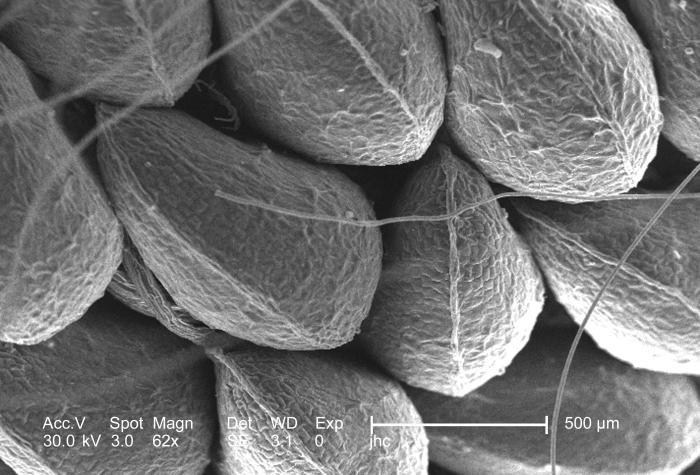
Under a low magnification of only 62x, this scanning electron micrograph (SEM) depicted a view of a seed clustered exterior of a commonly growing wild strawberry, Fragaria virginiana, that was found growing in Lullwater Park, inside the Decatur, Georgia suburbs. The F. virginiana fruiting bodies are very similar to the more familiar, store-bought varieties, and those who've tasted these fruits say that they're quite delicious.